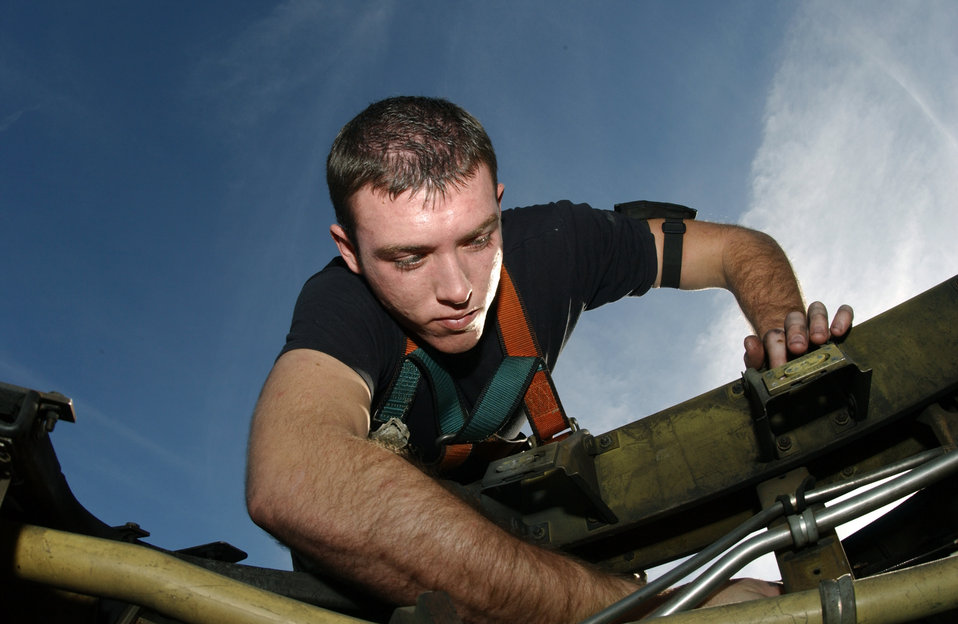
Stratofortress maintenance

BARKSDALE AIR FORCE BASE, La. -- Airman Gregory Panelli checks a B-52H Stratofortress throttle cable during a maintenance inspection here Dec. 2. Airman Panelli is assigned to the 2nd Maintenance Squadron.